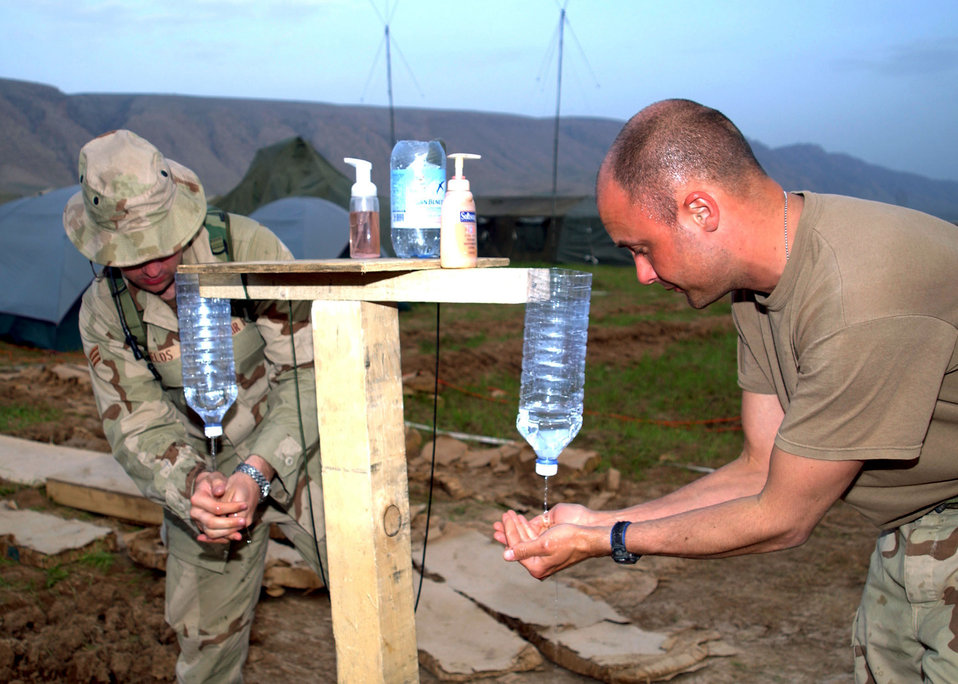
Always wash your hands

Senior Airman Seth Shields and 1st Lt. Jarrett Lee, 786th Security Forces Squadron, 86th Expeditionary Contingency Response Group, utilize a newly built field hand washing station April 3, 2003. Operation Iraqi Freedom is the multi-national coalition effort to liberate the Iraqi people, eliminate Iraqi's weapons of mass destruction and end the regime of Saddam Hussein.